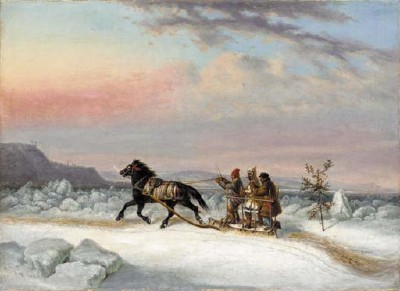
The Winter Crossing from Levis to Quebec, oil painting by Cornelius Krieghoff, 13.2 x 18.2 in.